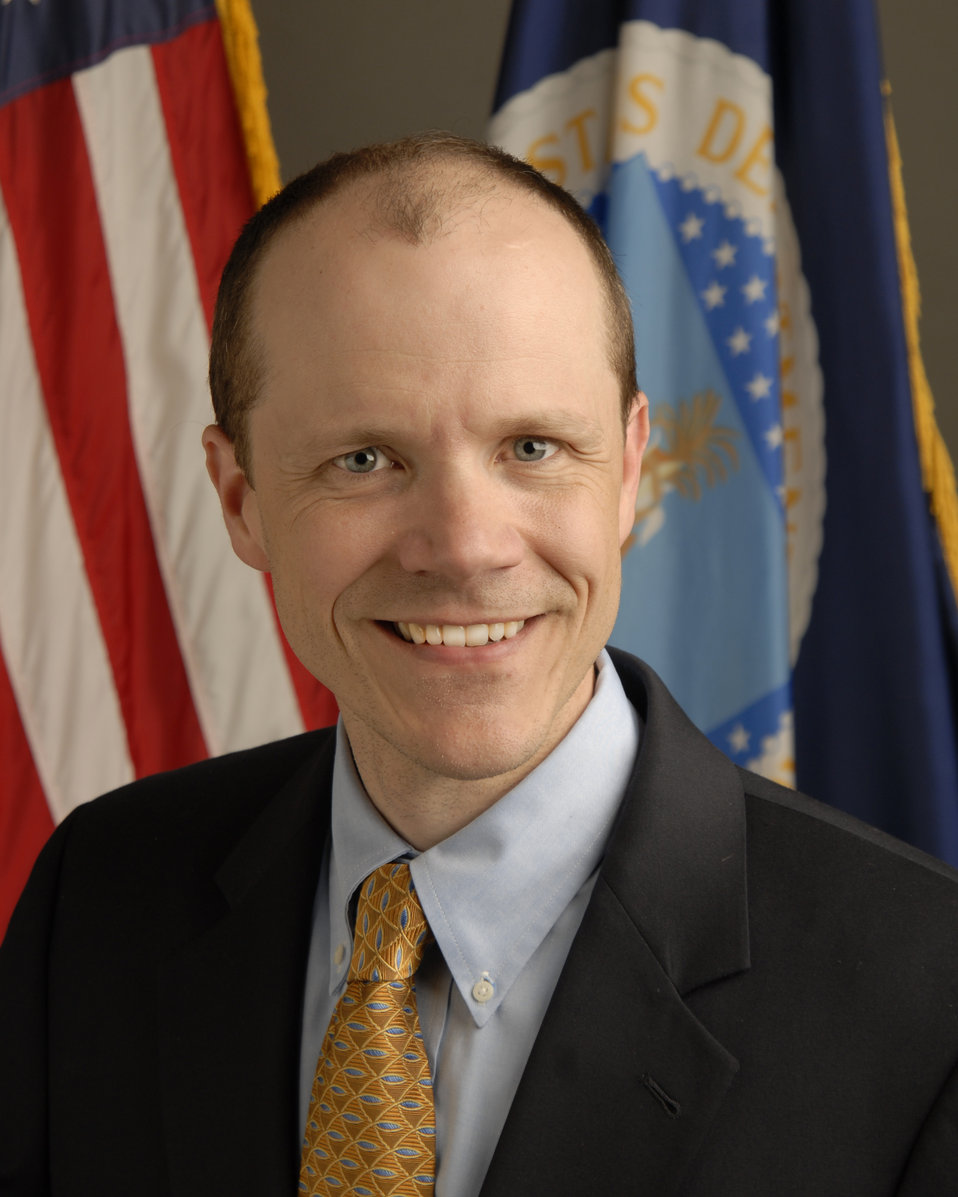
20110526-OSEC-KJH-0829 Acting Under Secretary for Rural Development Doug O'Brien

U.S. Department of Agriculture (USDA) Acting Under Secretary for Rural Development (RD) Doug O'Brien.